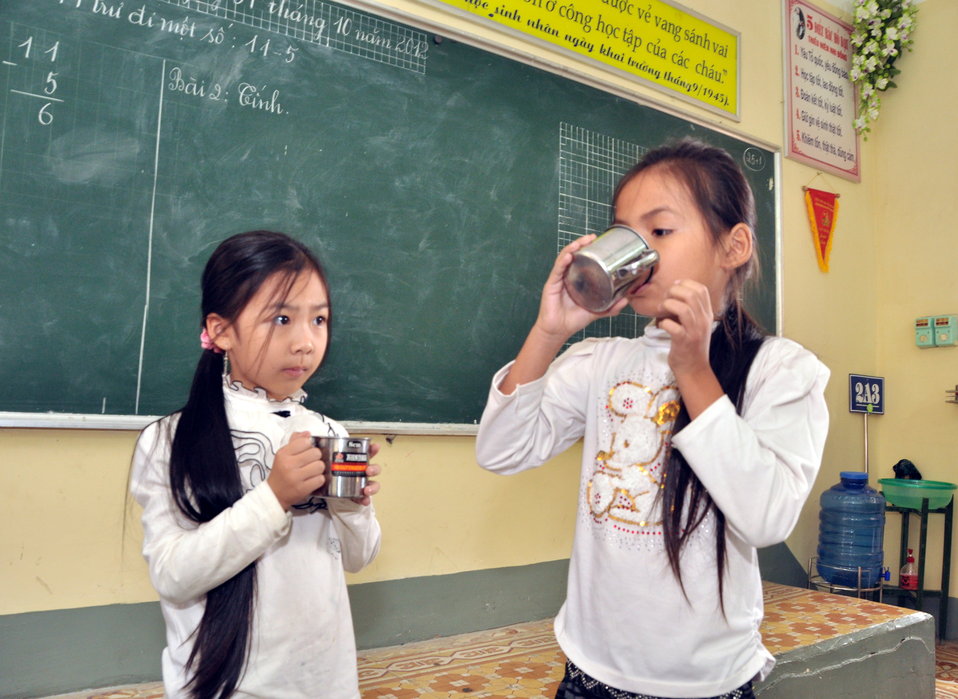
School children receive a dose of deworming medicine in Dien Bien Phu

October 31, 2012